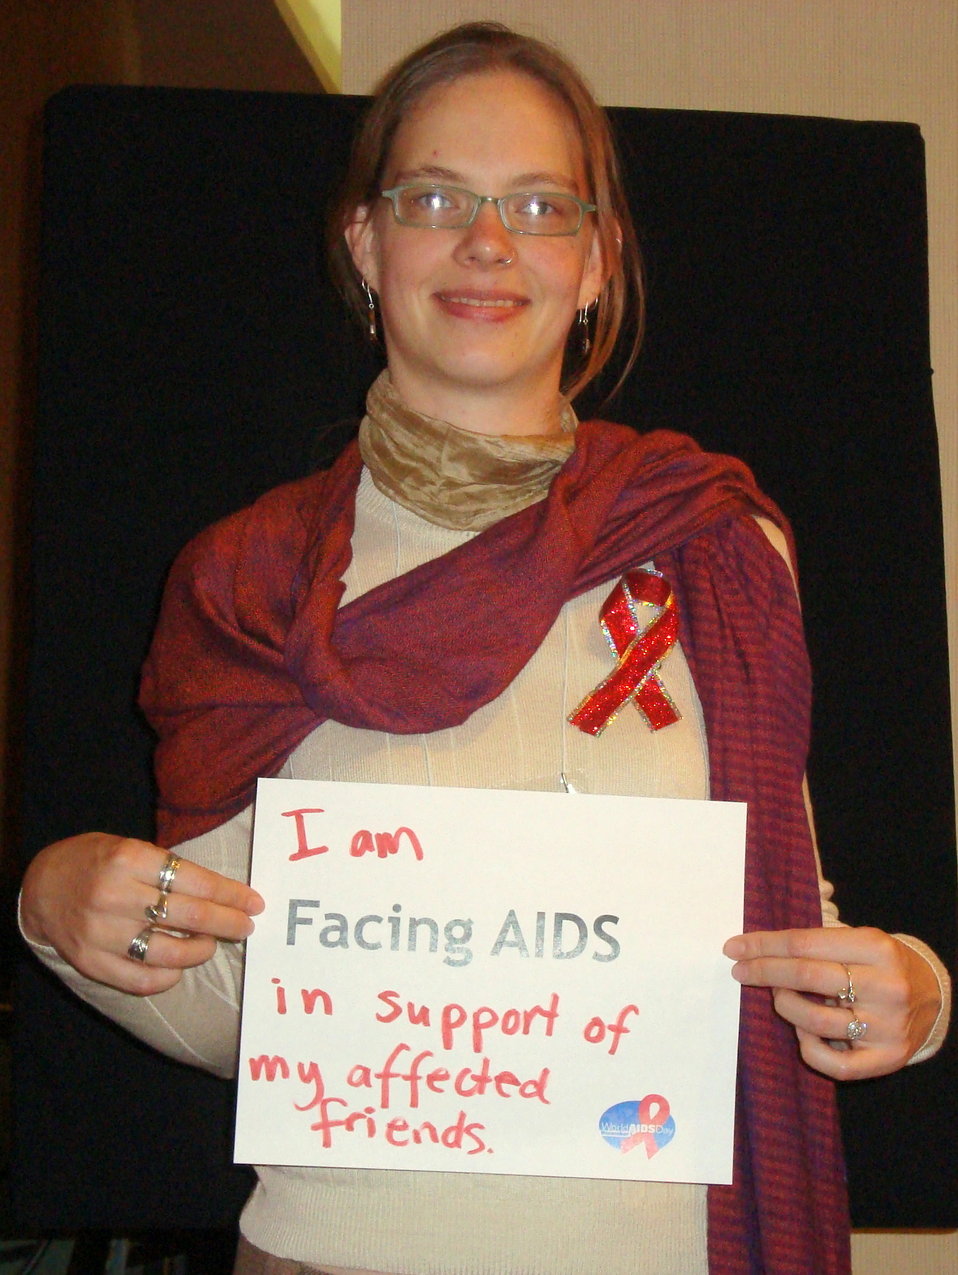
FacingAIDSCampaign 012